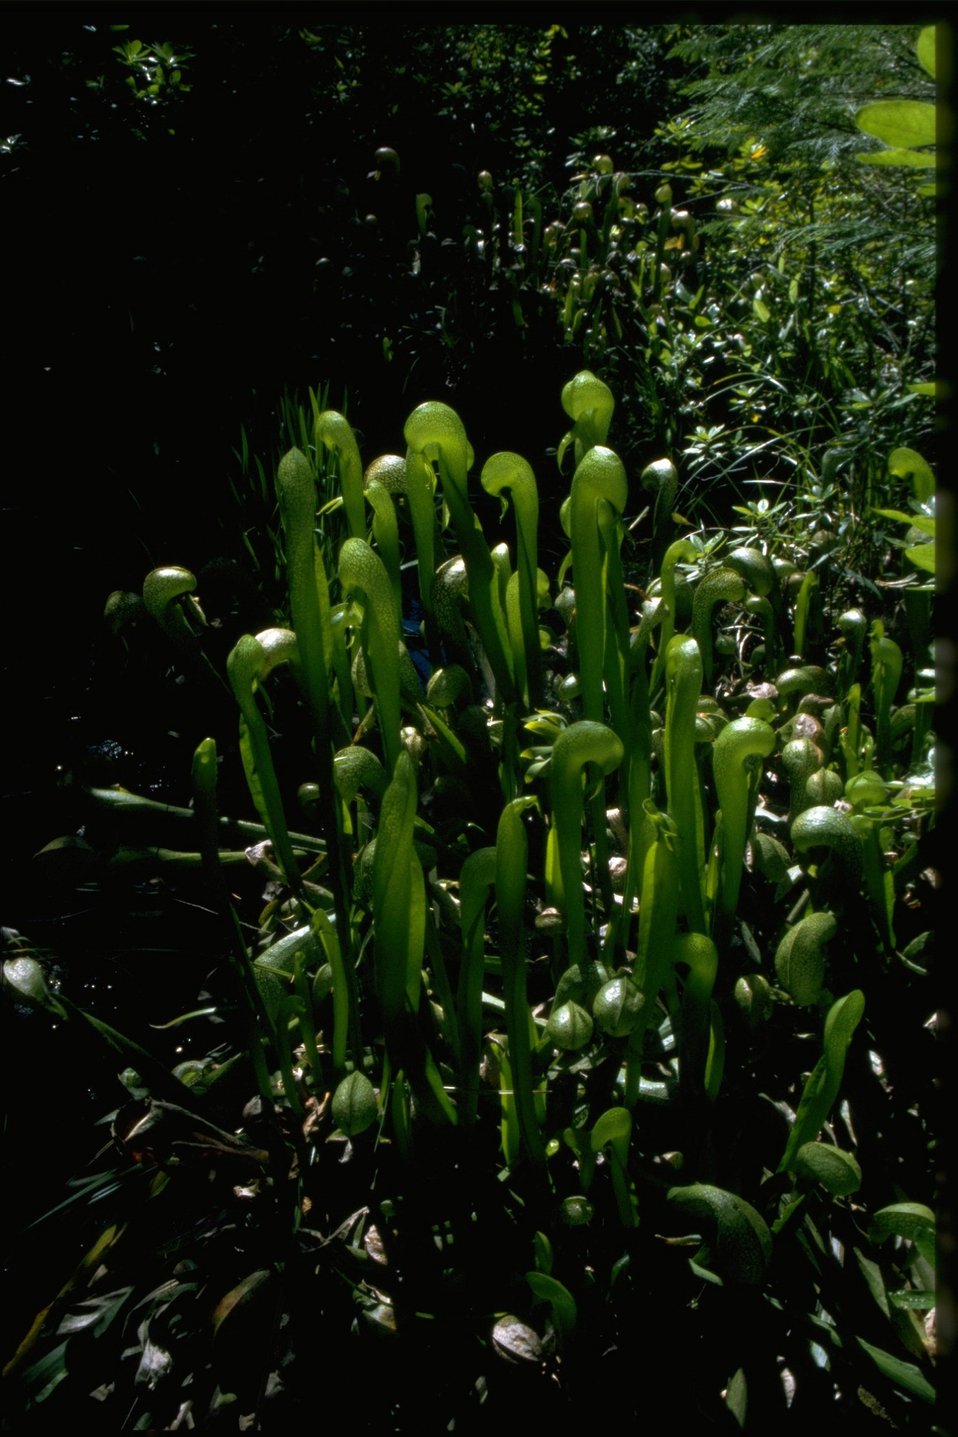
Medium shot of Cobra Lily, Darlingtonia californica.